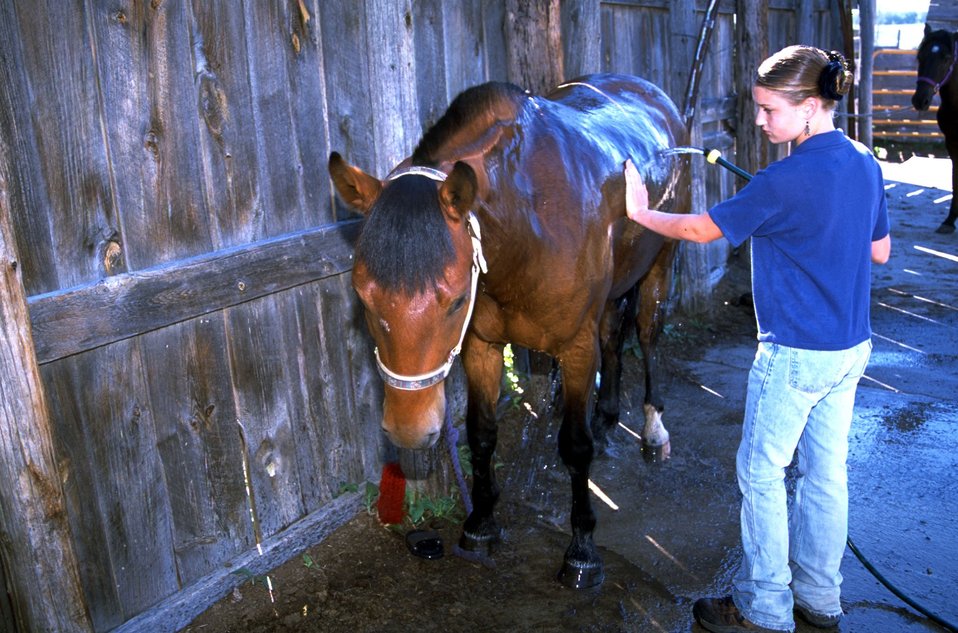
Grooming an Adoped Horse